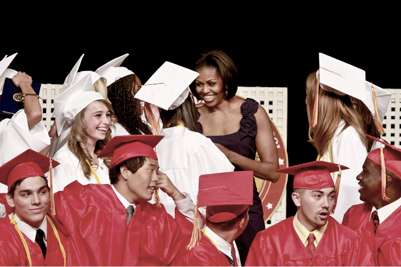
First lady awards diplomas

First lady Michelle Obama chats with the 2011 graduates of Quantico Middle/High School at Marine Corps Base Quantico, Va., June 3, 2011. The first lady gave the commencement address to the 36 graduates, including nine from Japan who relocated after the earthquake and tsunami earlier this year.